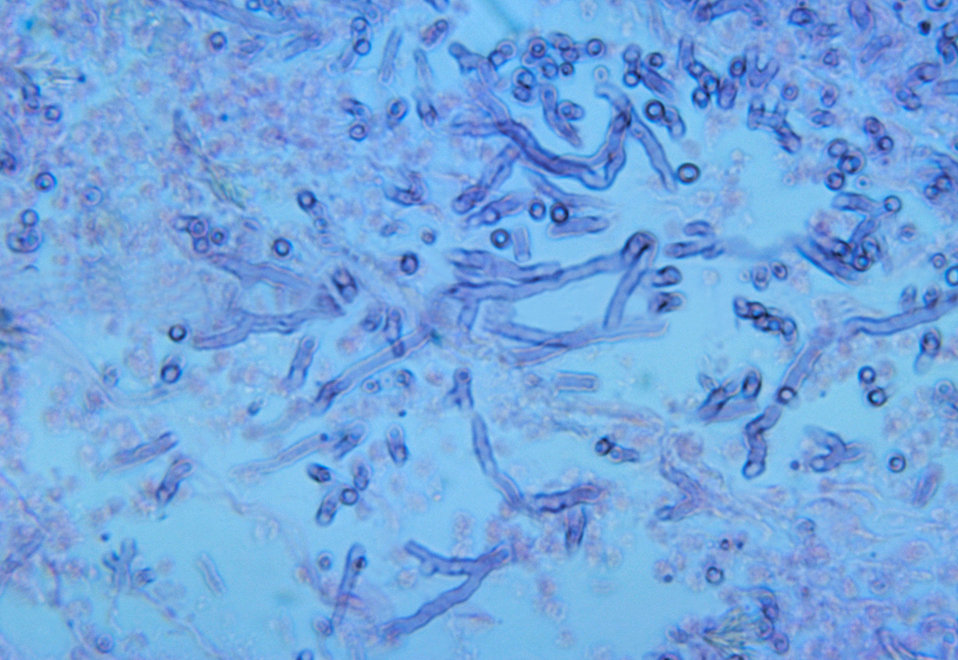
This image depicts histopathologic changes indicating aspergillosis of the lung of a caged parrot caused by A. fumigatus.